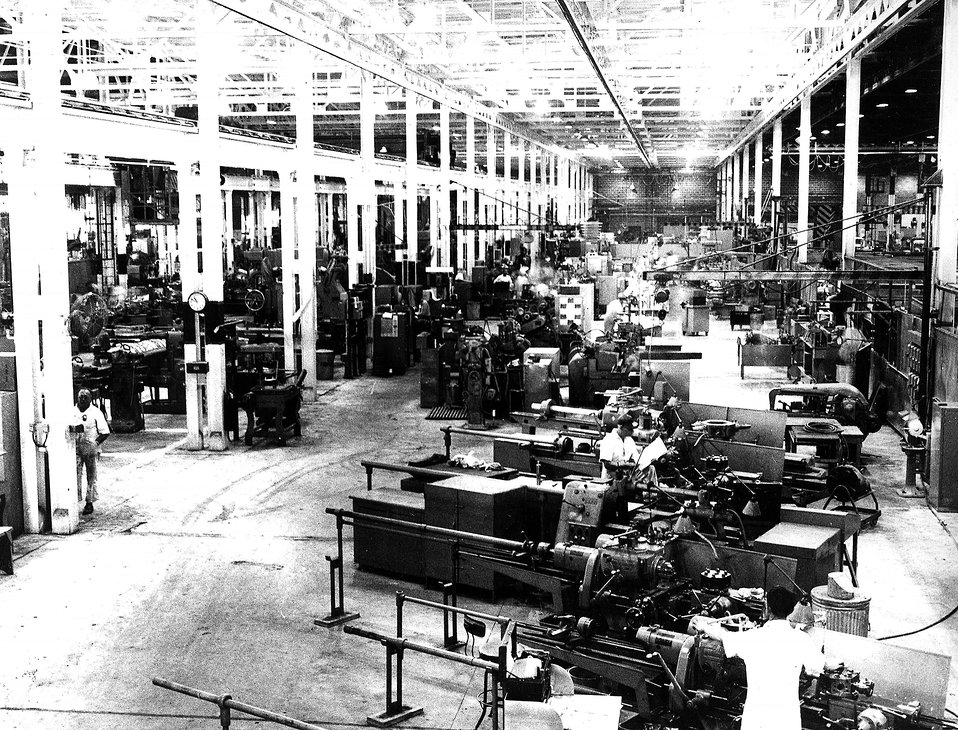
The ORGDP fabrication shops occupy over 300,000 square feet of floor space. Circa 1965.